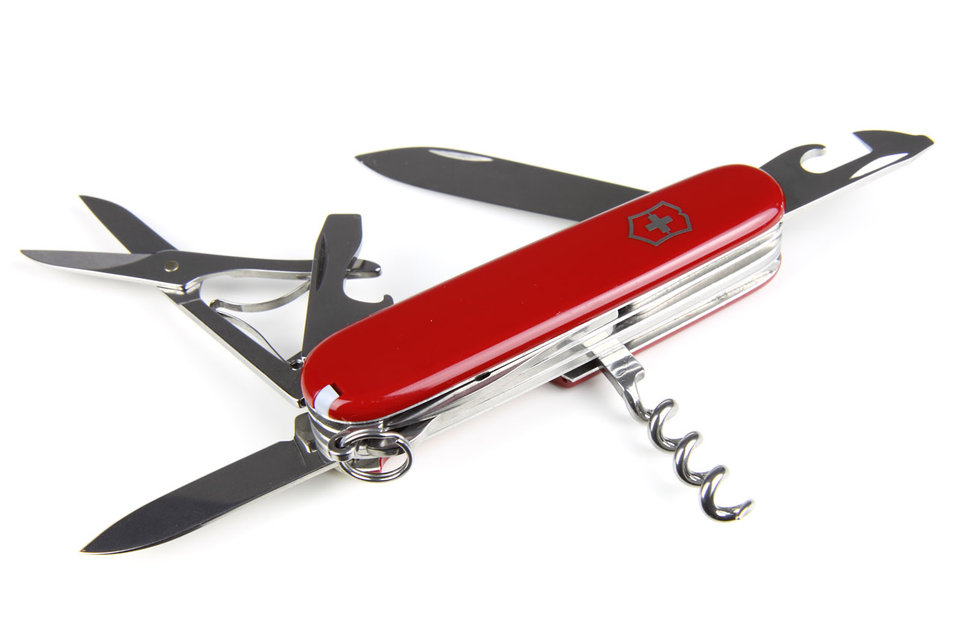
Open army knife

Open swiss army knife.